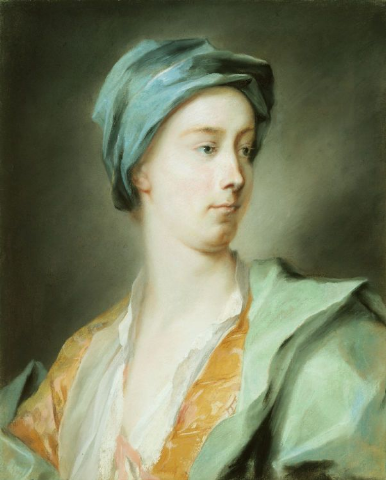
Philip, Duke of Wharton